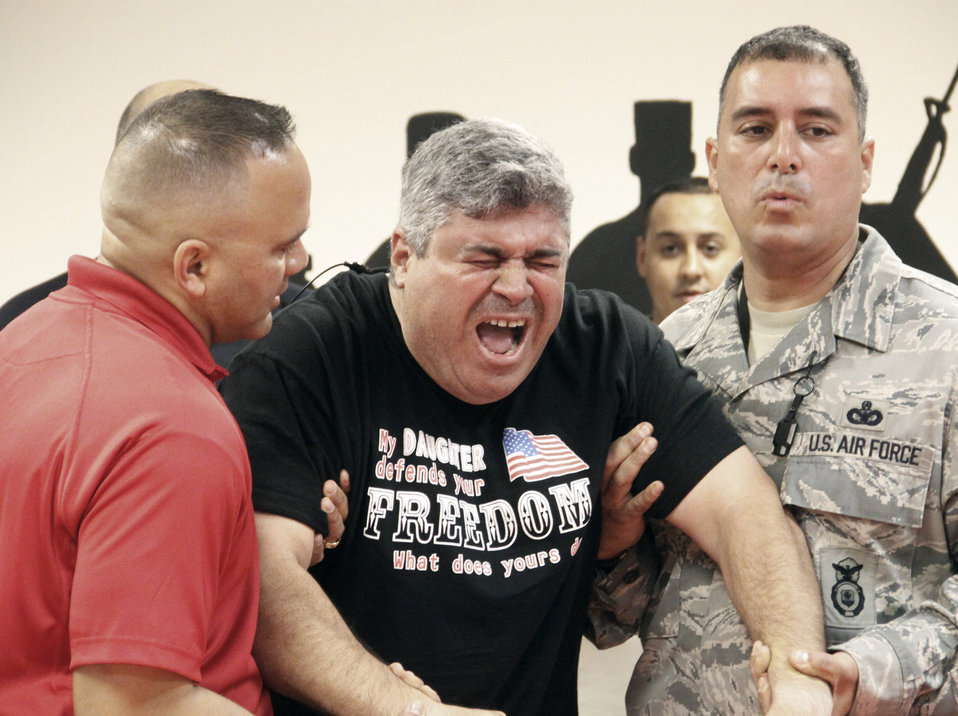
Homestead TASER training

Lt. Juan Lemus, takes part in voluntary exposure training with a TASER gun, Dec. 1, 2010, at Homestead Air Reserve Base, Fla. Electrodes from a TASER were attached to the volunteers back, and for five seconds they felt what it was like to be on the receiving end. The 482nd Security Forces Squadron recently became the first unit in the Air Force Reserve Command to complete training with TASER guns, adding a new nonlethal option to their arsenal. Lieutenant Lemus is the 482nd Security Forces Squadron Police Services chief.